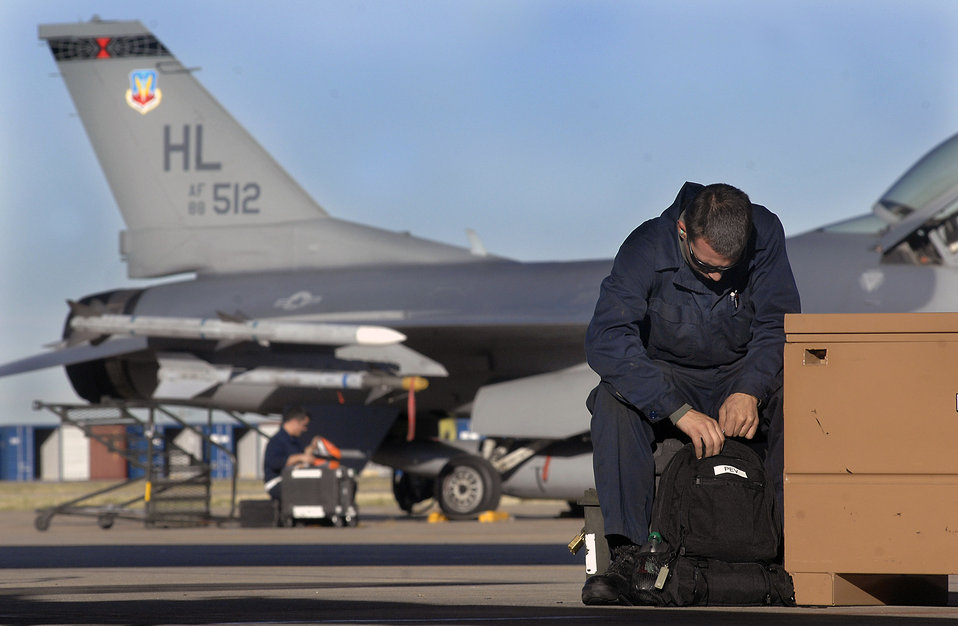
Hill fighter squadron excels with Total Force Integration mission

Senior Airman Robert Pevoroff gets ready to prep an F-16 Fighting Falcon for flight Oct. 10 while Staff Sgt. Chris Hatten reviews forms prior to the arrival of the aircrew. Both crew chiefs are assinged at Hill Air Force Base, Utah., Sergeant Hatten is with the 388th Aircraft Maintenance Squadron and Airman Pevoroff is with the 421st Aircraft Maintenance Squadron.